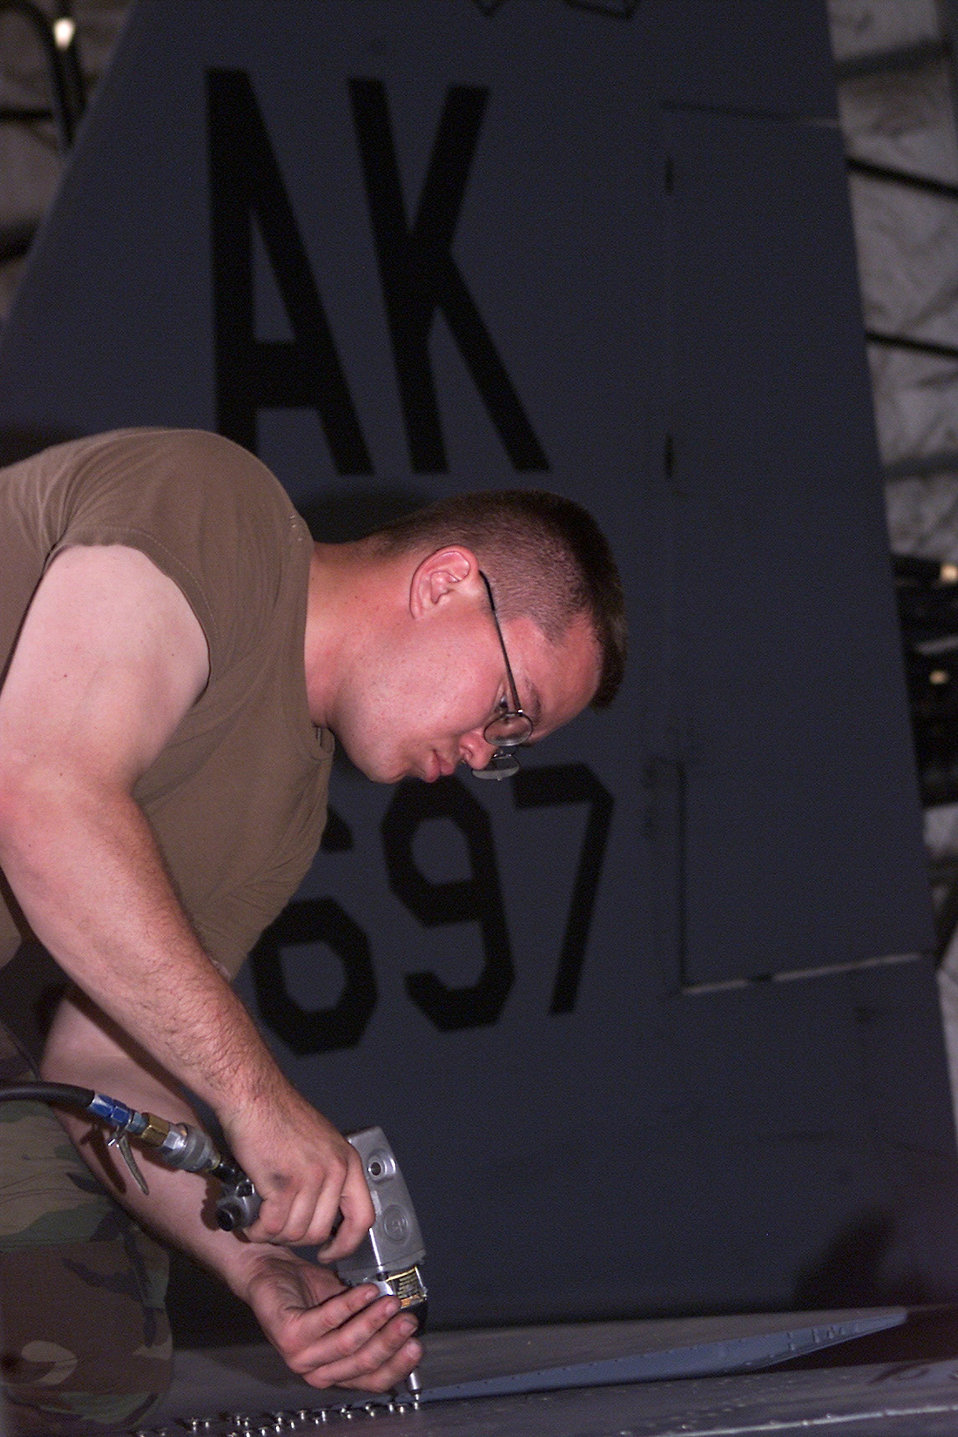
Phase inspection

GWANGJU AIR BASE, South Korea -- Airman 1st Class Joshua Morgan depanels an F-15E Strike Eagle for phase inspection here Sept. 7.